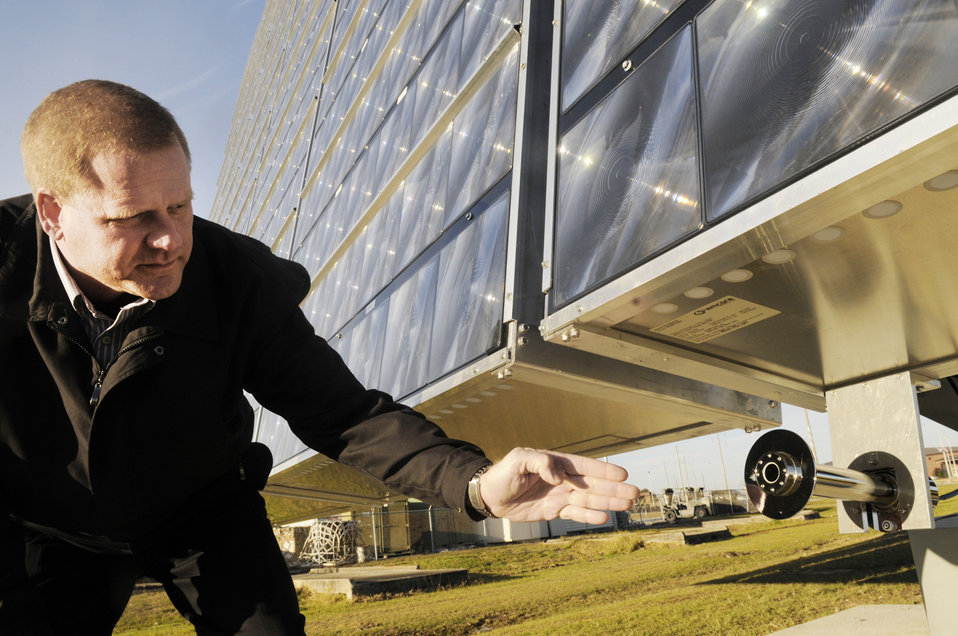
Robins home to southeast's first-of-its-kind solar technology

Scott Slyfield points out a direct normal incidence sensor that provides tracking information to the computer to ensure automatic calibration. Mr. Slyfield is an APTO program manager at Robins Air Force Base, Ga.